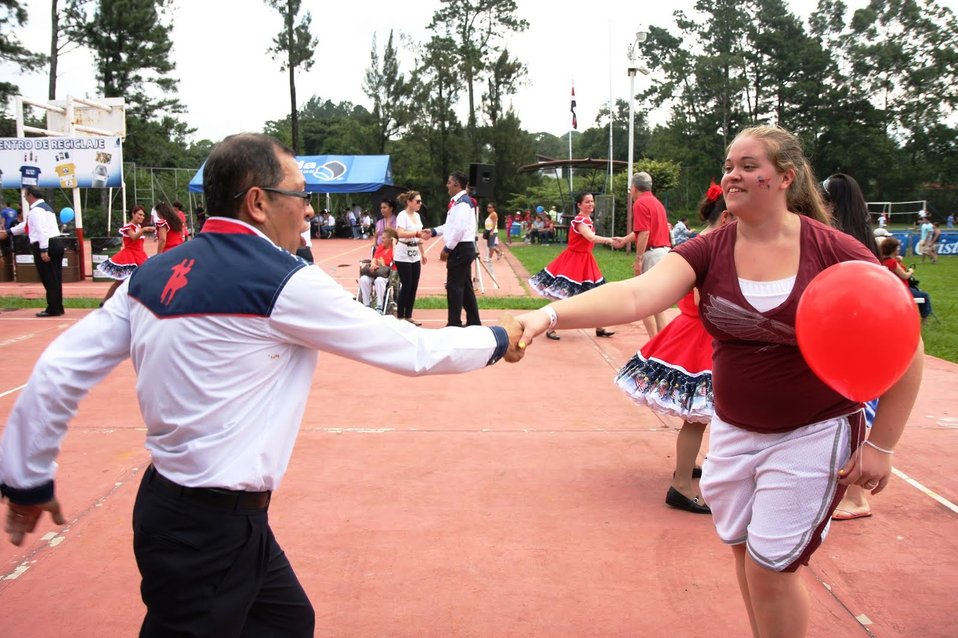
Students Square Dance

Students from U.S. Embassy San Jose in Costa Rica's English Access Microscholarship Program square dance during the U.S. Independence Day celebration on July 2, 2010, in San Jose, Costa Rica.